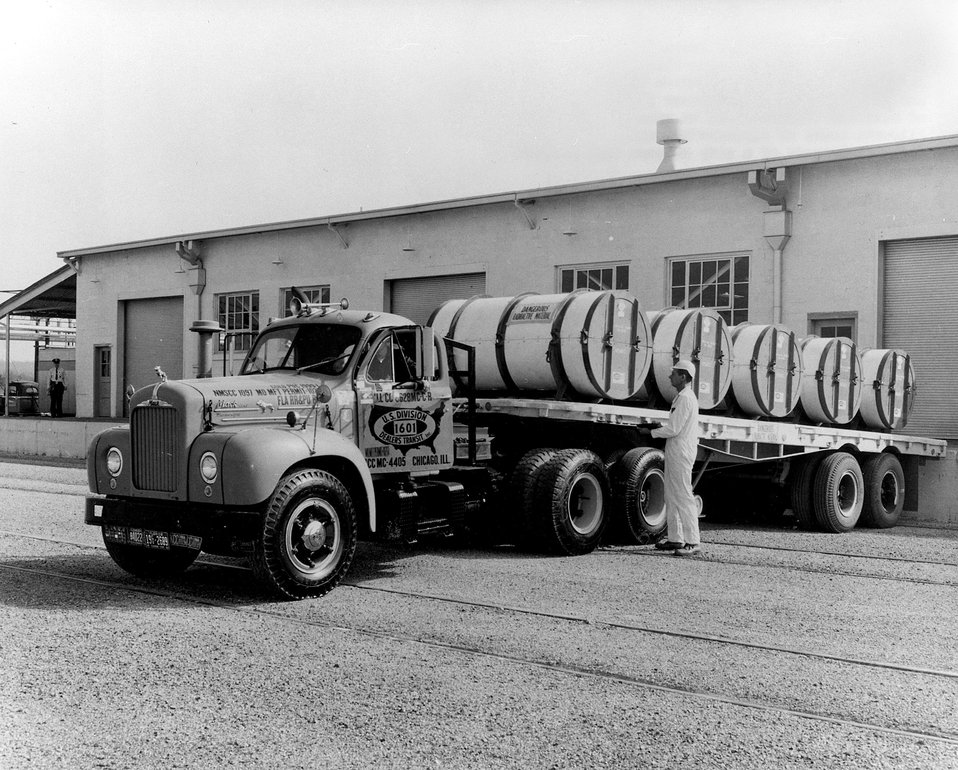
Preparing to leave ERDA's Oak Ridge Gaseous Diffusion Plant is a load of some 12 tons of uranium hexaflouride destined for ultimate use as fuel in a nuclear power plant. Circa 1969.